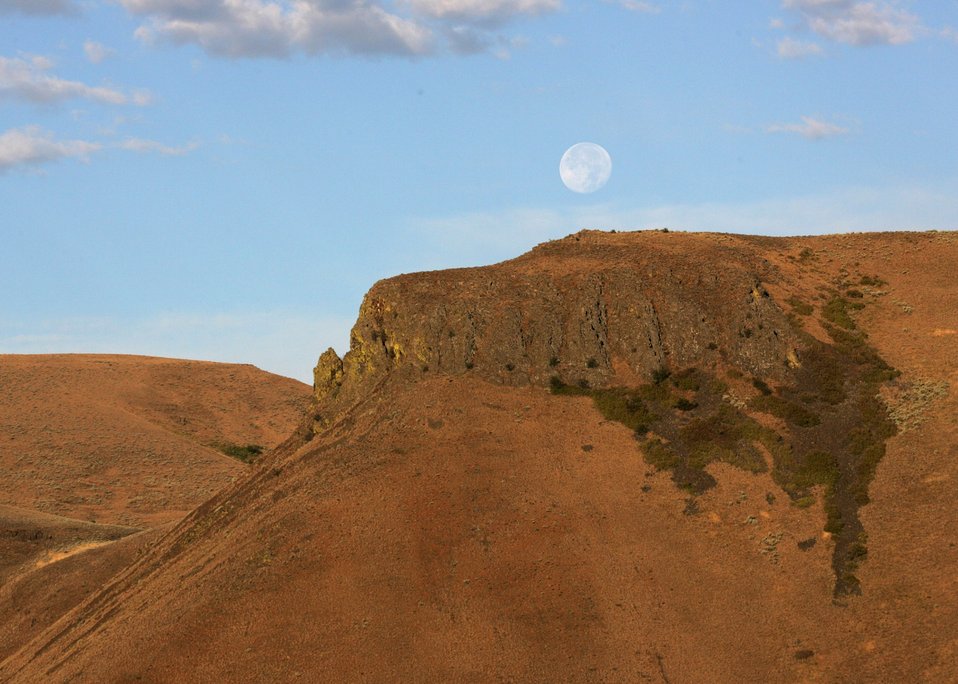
Moonset on the Snake River Backcountry Byway.